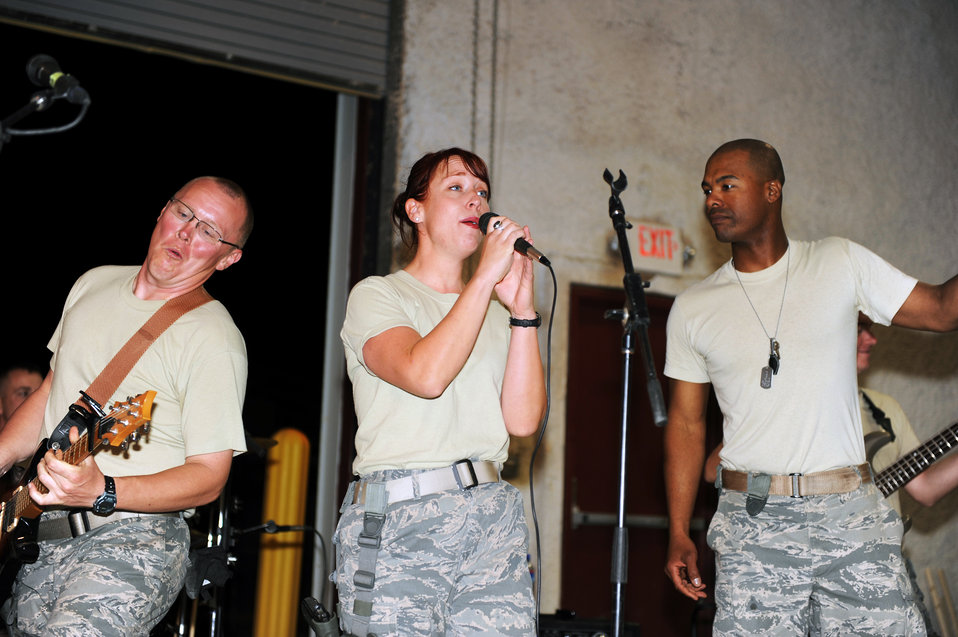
Band rocks Bagram servicemembers

Senior Airman Josh Byrd (left) Airman 1st Class Jill Diem and Master Sgt. Aaron Miles perform April 17, 2010, at Bagram Airfield, Afghanistan. Airman Byrd is a guitarist, Airman Diem is a vocalist and Sergeant Miles is the NCO in charge of the U.S. Air Forces Central Band Reserve Generation.